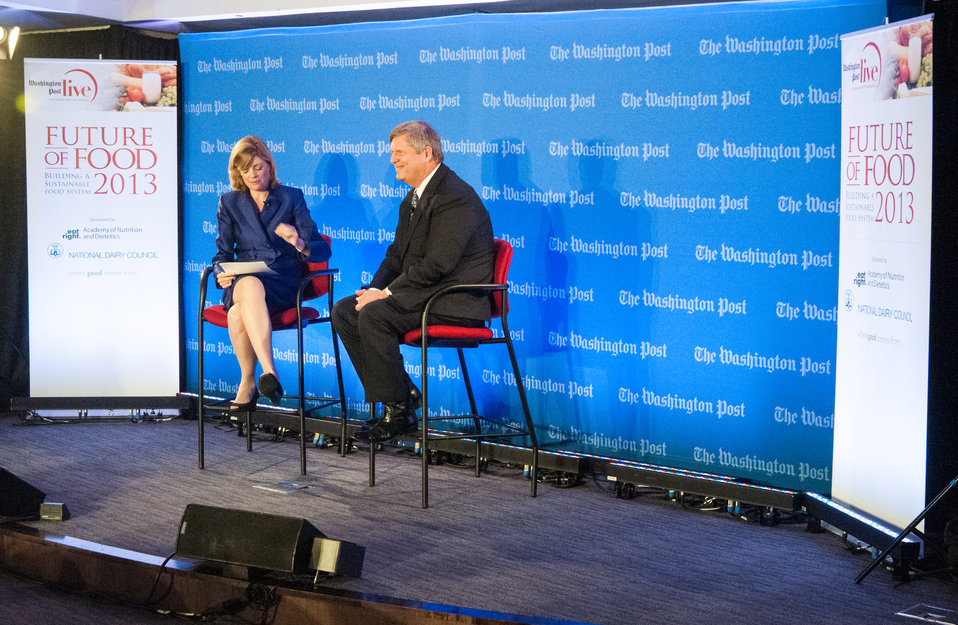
Washington Post Live Editor Mary Jordan and Agriculture Secretary Tom Vilsack react to a question posed during the annual live forum, “Future of Food: Building a Sustainable Food System 2013,” sponsored by the Washington Post in Washington, D.C. on Wednesday, May 22, 2013. Secretary Vilsack along with leading agricultural, government and nutrition experts discussed expanding healthy, sustainable food systems, public-private partnerships, the market’s role in nutrition and the future of agricultural innovation.